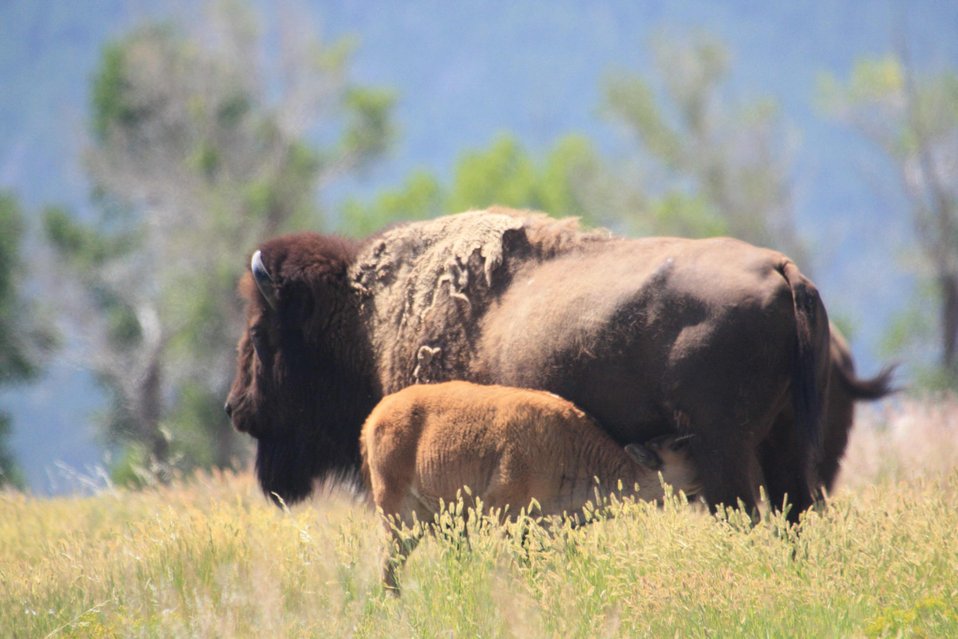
Still Needs TLC

Female bison will care for their young for about a year. By the middle of their first winter, juvenile bison can feed independently and have the typical brown fur of the adults.

Credit: USFWS / Ann Hough, National Elk Refuge volunteer